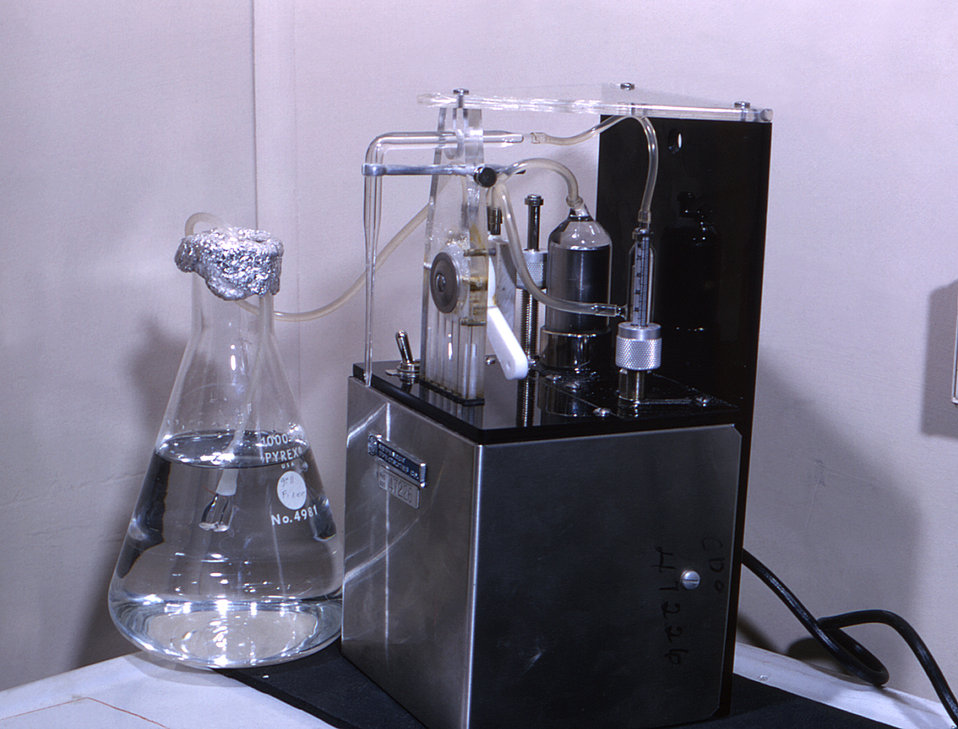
This historic image from 1964 depicts a autodiluter, which automates various laboratory tasks such as precisely diluting and mixing solutions that would normally be carried out by hand.